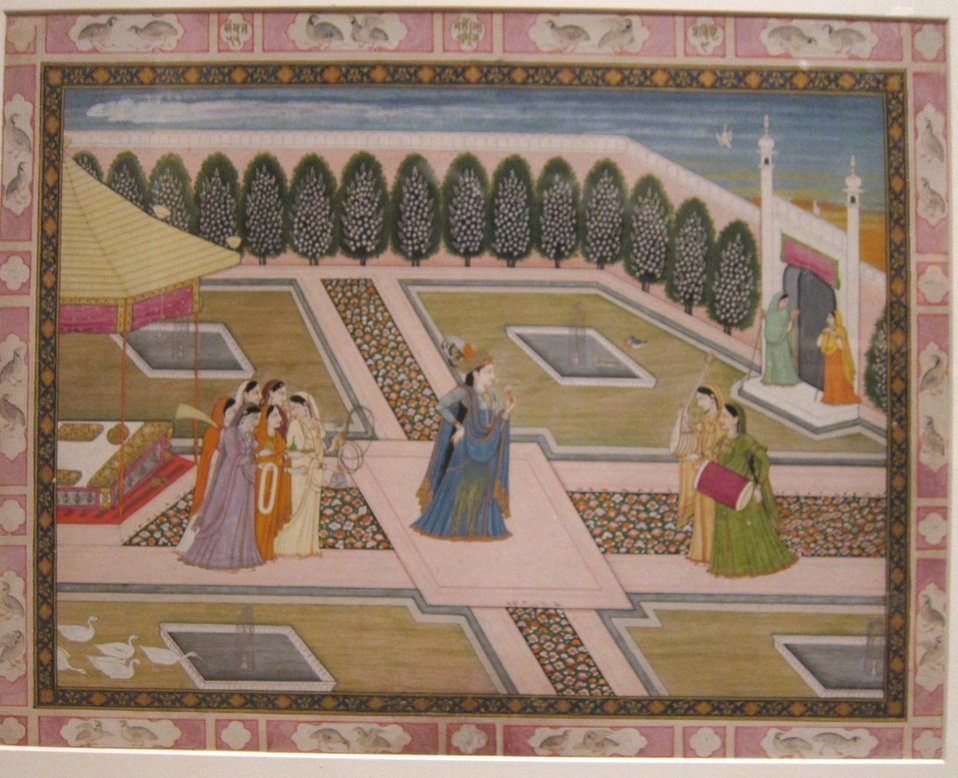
Princess in a Courtyard anonymous watercolor on paper painting from India, Guler style, dated 1799, Honolulu Museum of Art, accession 10812.1